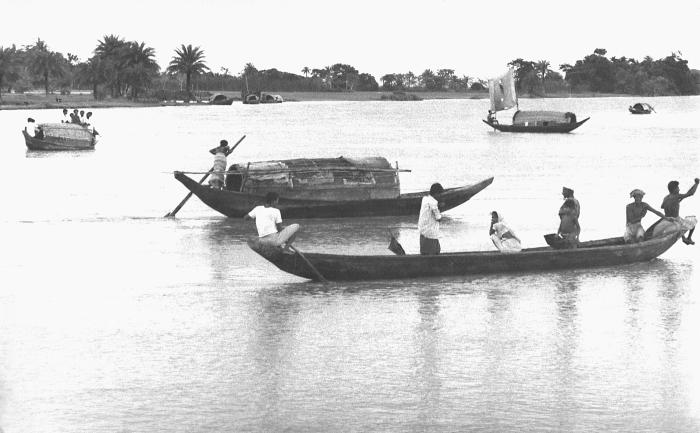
This image depicted a common river scene, capturing a moment at which time a number of different types of boats were using this waterway for transport, or travel. This photograph provided by Dr. Stan Foster, and captured by Pierre Claquin, M.D., B.A.C., who at the time was a member of the World Health Organization's Smallpox Eradication Program. It was part of a series photographed by former E.I.S. officer, Stanley O. Foster M.D., M.P.H., and was one of a series entitled 'The Story of One Smallpox Jeep', which depicted the travails faced by the jeep, and its occupants of public health practitioners, as they road through the Bangladesh countryside in an attempt to eradicate smallpox from the country.